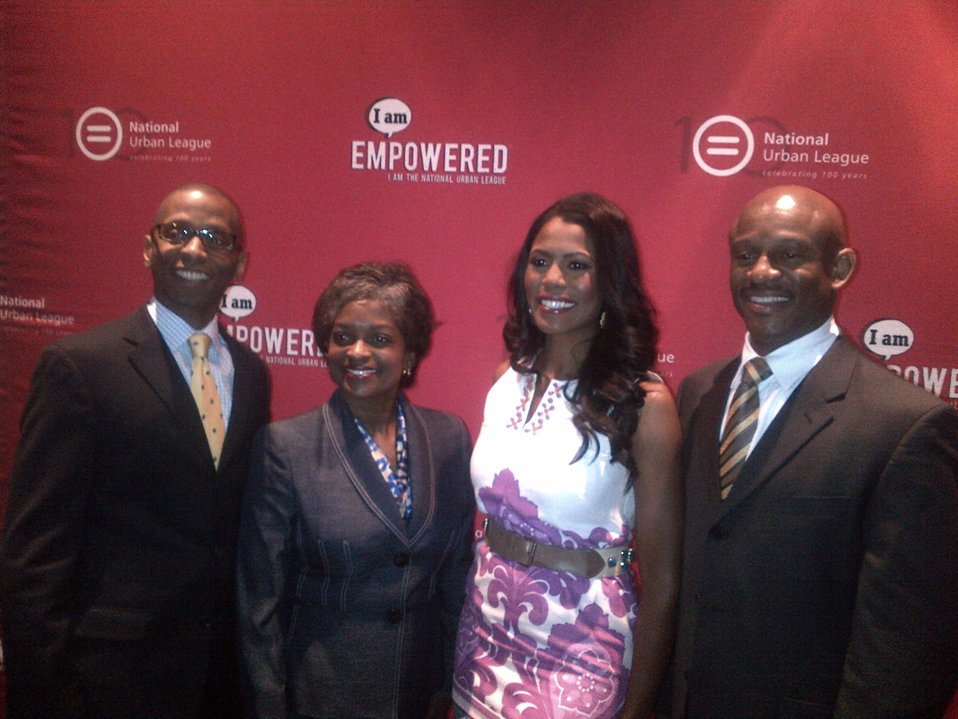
National Urban League Joint Leadership Luncheon 7-24-2013

The National Urban League Joint Leadership Luncheon during the 2013 National Urban League Conference in Philadelphia.